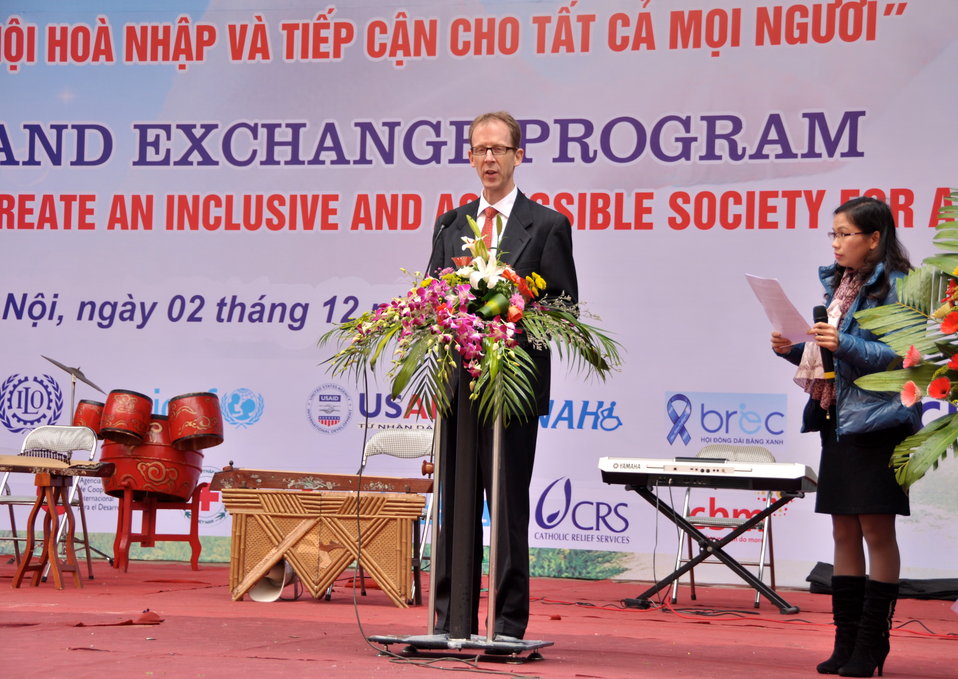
USAID Mission Director Joakim Parker joins celebration of International Day of Persons with Disabilities in Hanoi, Vietnam028

December 2, 2012